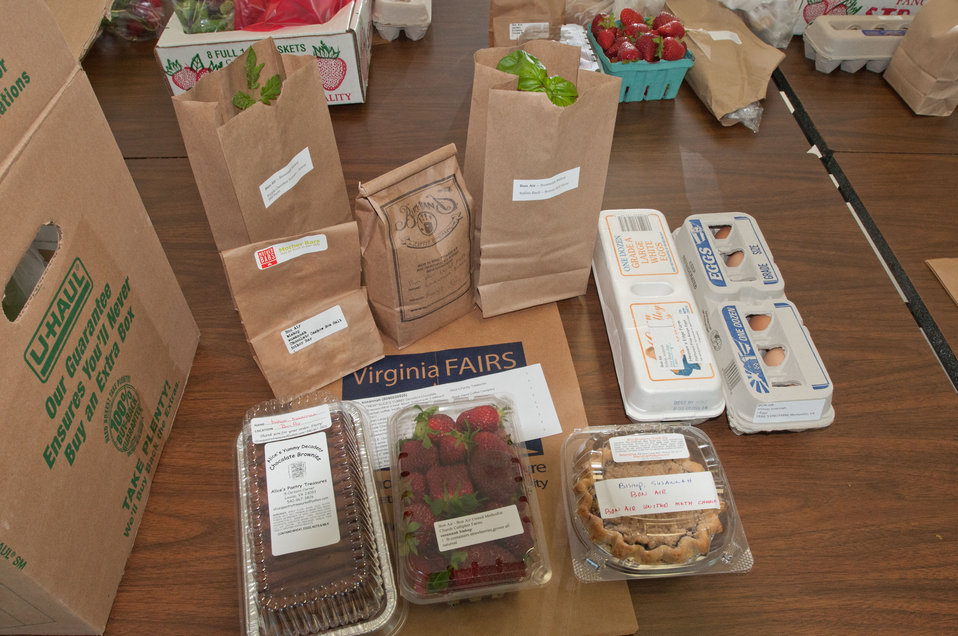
Customized orders at the Bon Air United Methodist Church pick-up point, in Richmond, VA, are the main difference between Fall Line Farms food hub and traditional food cooperatives (that provide identical orders) on May 5, 2011. This is one of several pick-up points in the Richmond area that are open every Thursday afternoon. This local food hub offers a wide variety of household food staples and specialty items. Members can pick their customized orders from an ever changing inventory of fruits, vegetables, meats, soaps, eggs, cheeses, flowers, honey, pastas, sauces, syrups, baked goods, mushrooms, flour and grains. Suppliers post what they have on a Lulus Local Food online listing and customers (who pay seasonal dues) can make their selection. Then every Thursday suppliers team up with other suppliers to deliver orders to, one of several pick-up points, designated by the customer in or around the Richmond area.